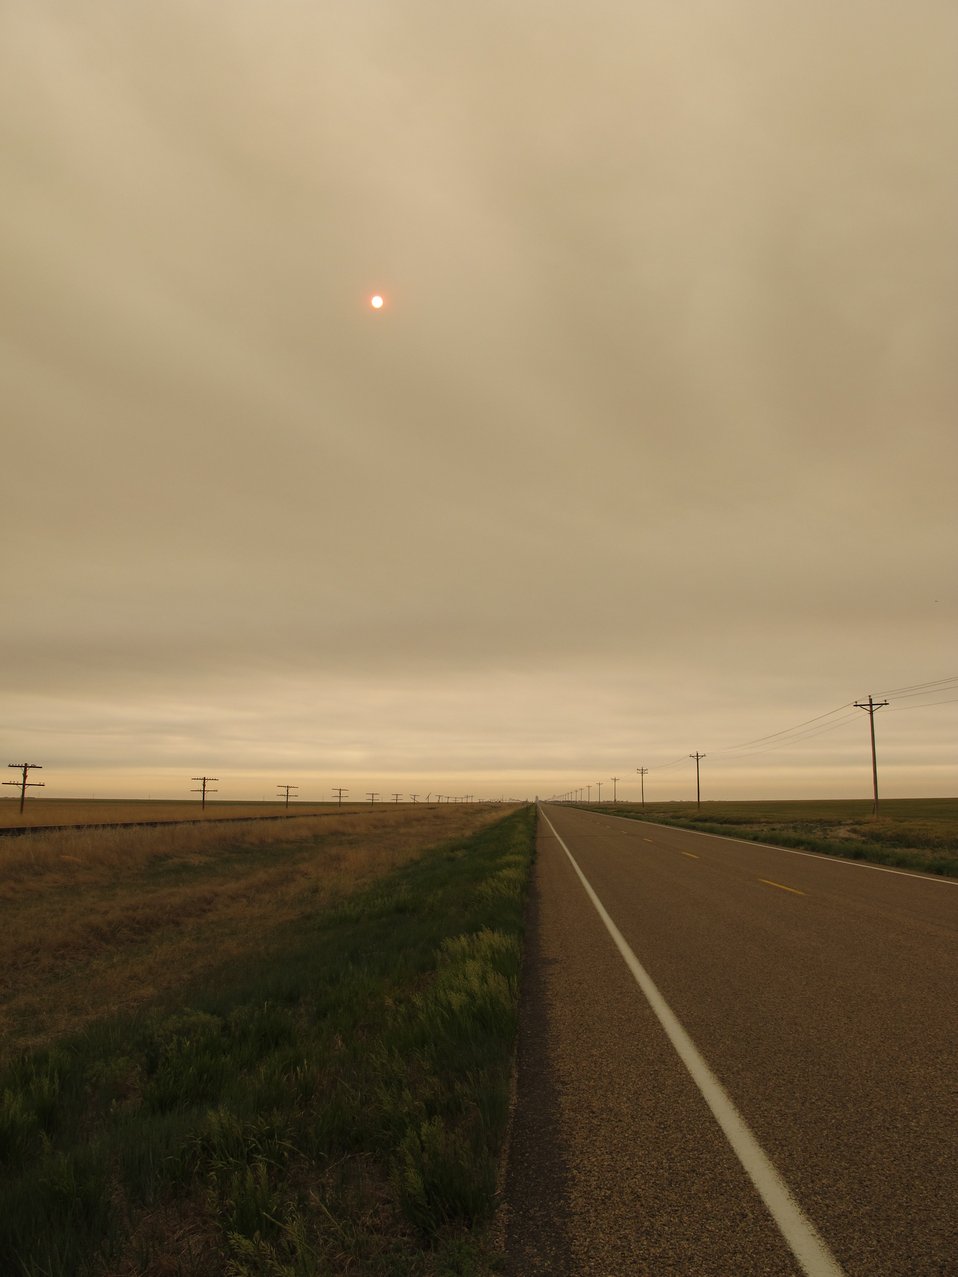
Smoke from wildfires in Arizona puts a graze haze over the Kansas-Colorado border area.